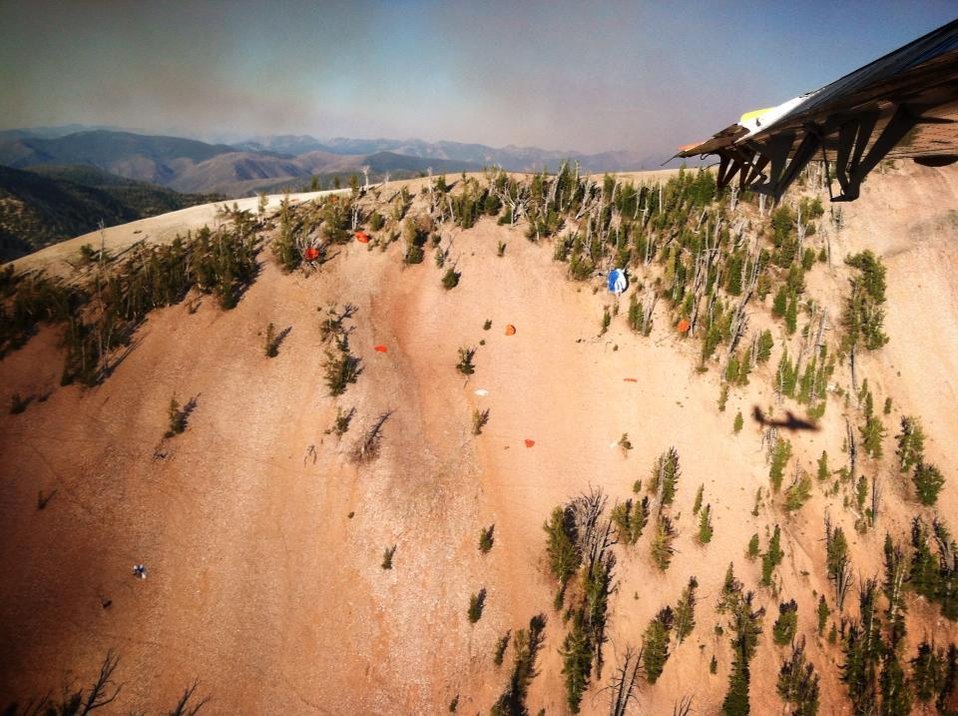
Smokejumpers drop into fire area at The Thunder City Fire. The Thunder City Fire in the Payette National Forest near Stibnite, ID began on Jul. 19, 2013 by lightning and has consumed approximately 1,520 acres and is approximately 15% contained.